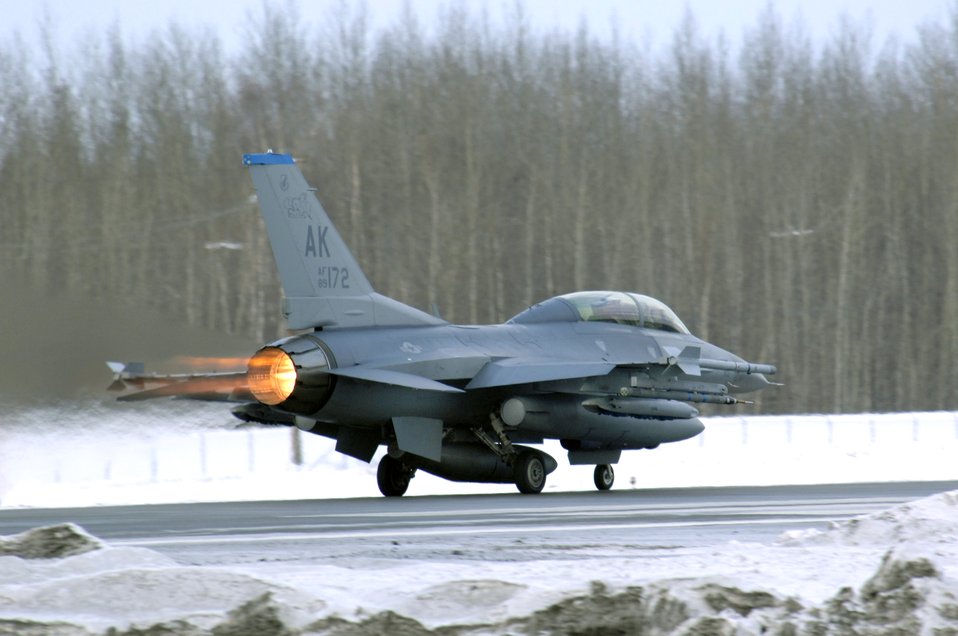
A chilling task

An F-16 Fighting Falcon takes off Feb. 8 at Eielson Air Force Base, Alaska. The 18th Fighter Squadron conducts air operations for combat-ready F-16 aircraft and provides close air support, forward air control, battlefield air interdiction, and offensive counter air.